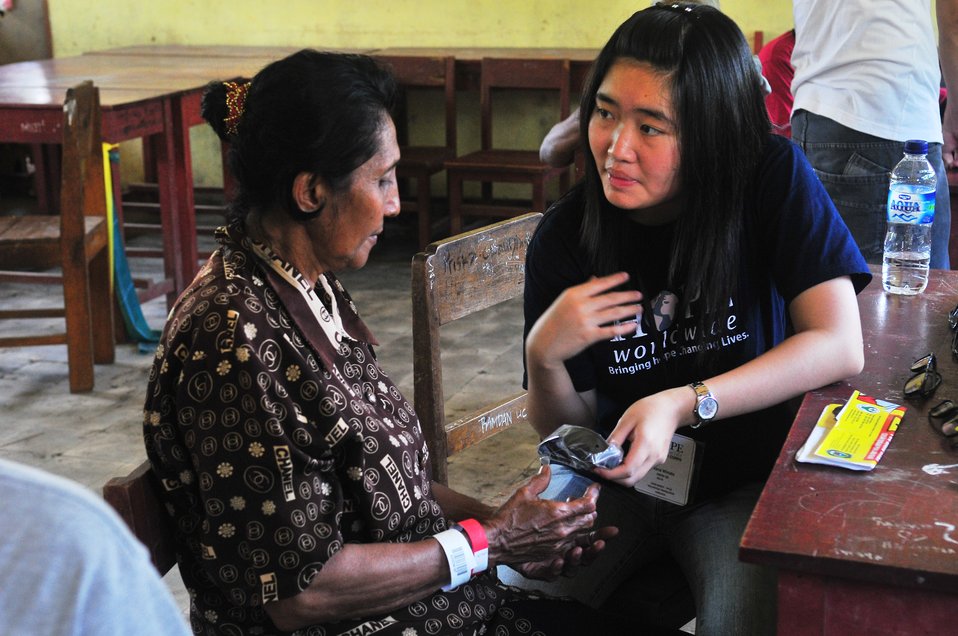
Project HOPE Nurse Ivana Winata Hands an Indonesian Woman a Pair of New Glasses

Project HOPE nurse Ivana Winata, currently embarked with the Military Sealift Command hospital ship USNS Mercy (T-AH 19), hands an Indonesian woman a pair of new glasses during a medical civic action program during Pacific Partnership 2010 in Tobelo, Indonesia, on July 15, 2010. Pacific Partnership 2010 is the fifth in a series of annual U.S. Pacific Fleet endeavors conducted in Indonesia as a disaster relief exercise to strengthen regional partnerships.